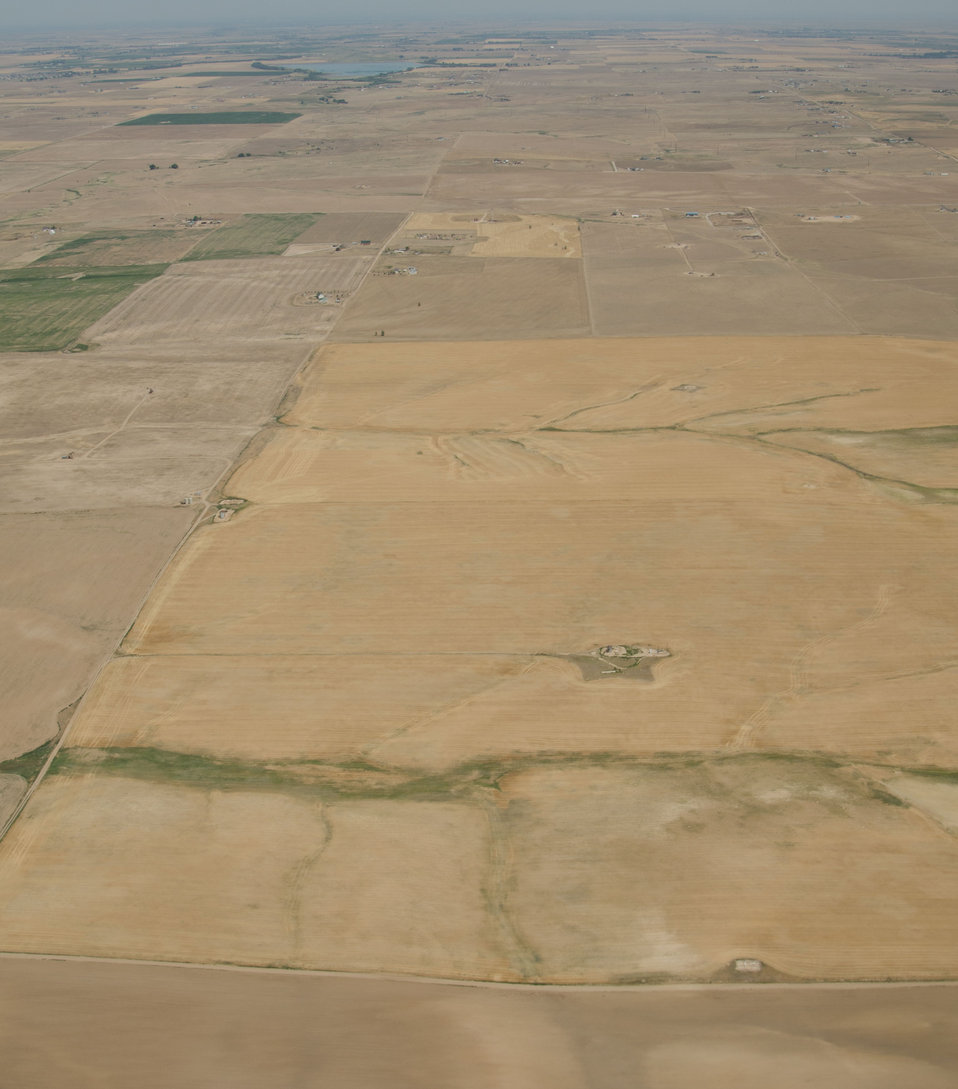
Aerial views of drought affected Colorado farm lands, 69 miles east of Denver, Colorado on Saturday, July 21, 2012. Green areas are irrigated, the yellow areas are dryland wheat crops.